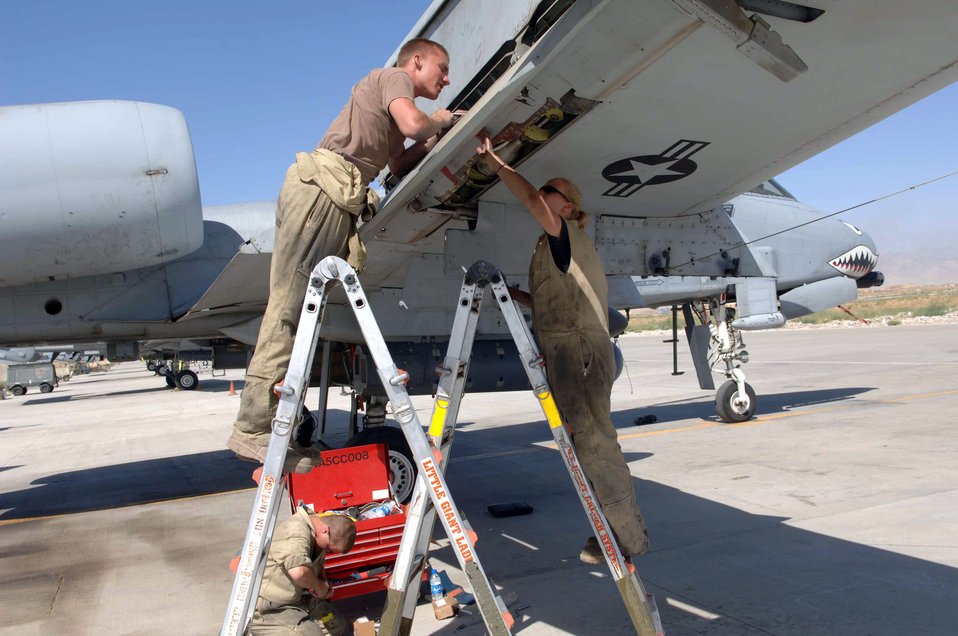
Wingin' it

BAGRAM AIR BASE, Afghanistan -- Airmen 1st Class Randy Boyer (left) and Alisha Cox and Senior Airman Jason Millett (bottom) work on an A-10 Thunderbolt II's wing. They are crew chiefs with the 455th Expeditionary Maintenance Squadron here and are deployed from Pope Air Force Base, N.C.